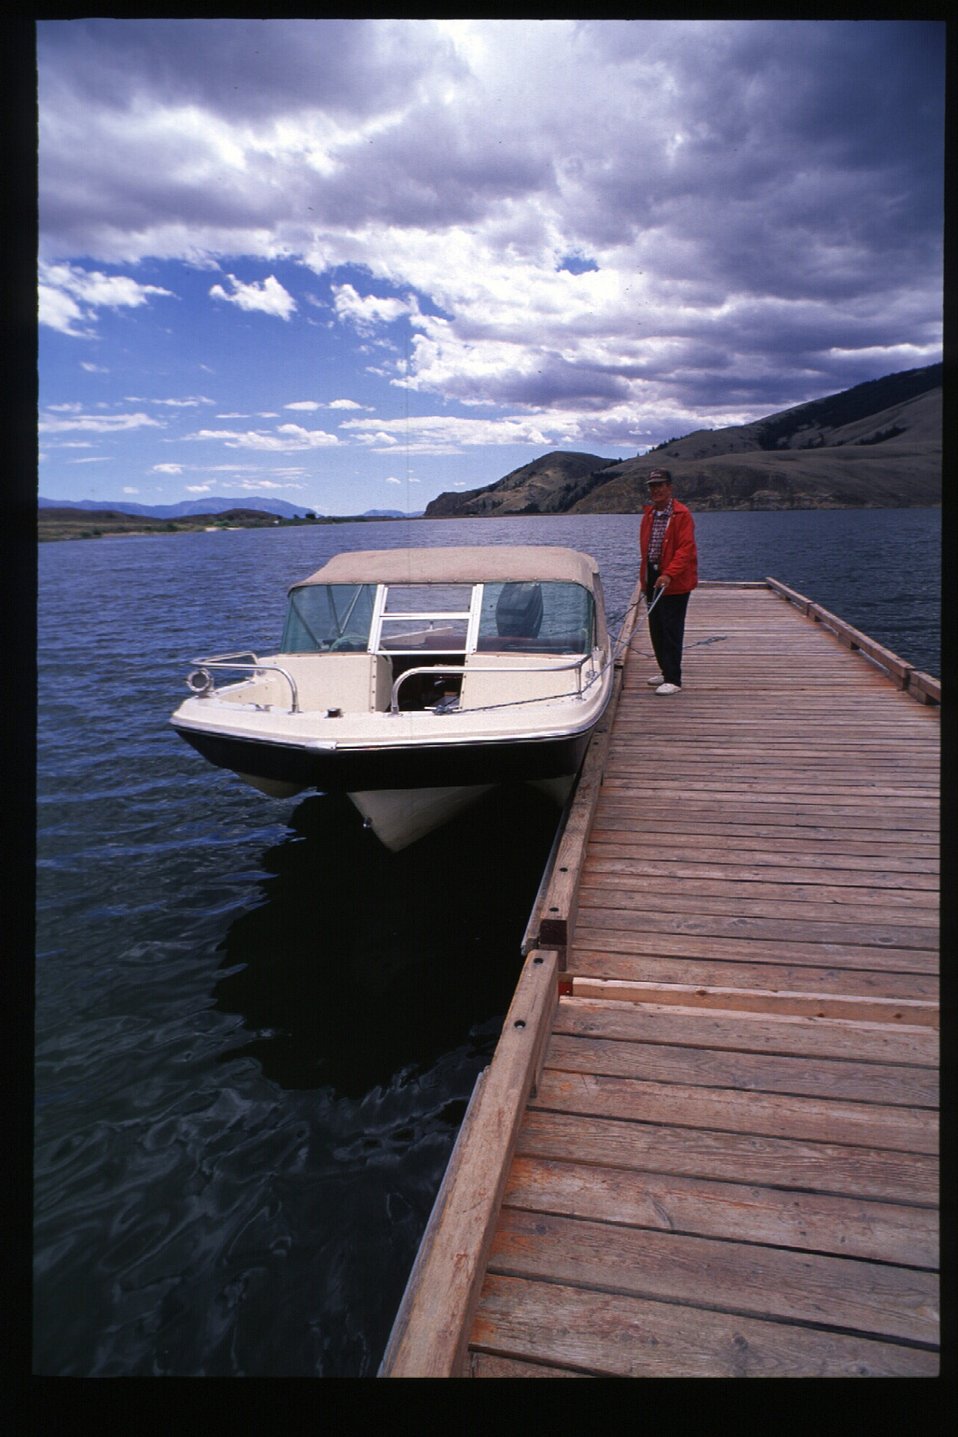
Scenic at Mackay Reservoir Challis Field Office UCSC Upper Columbia Salmon Clearwater District